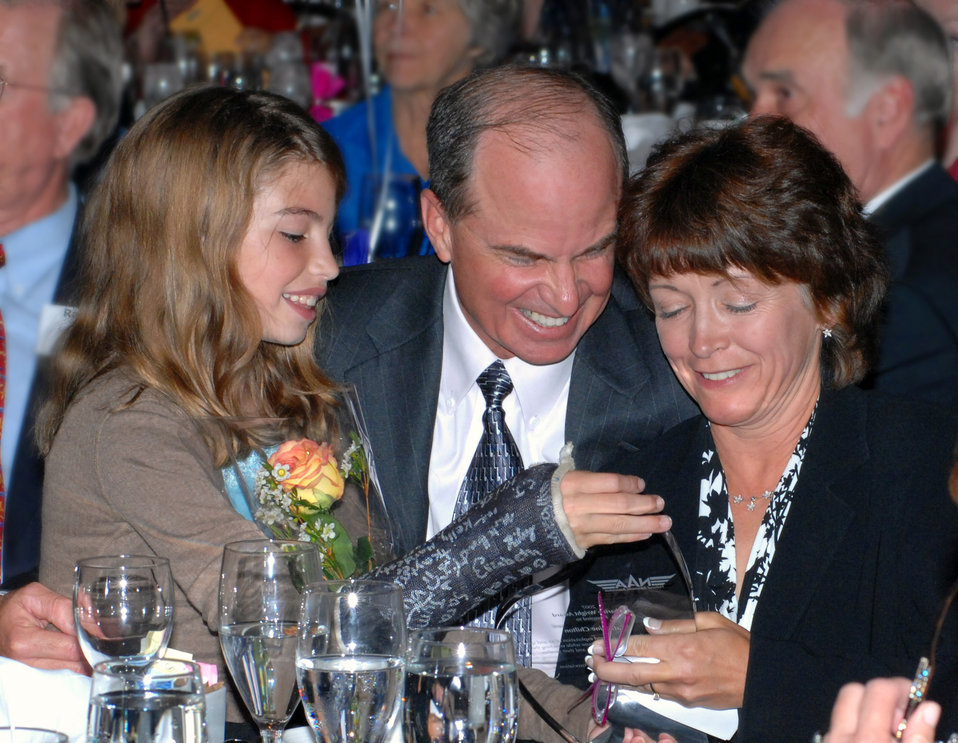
One woman, one big award

Col. Catherine A. Chilton shares a celebratory moment with her husband Gen. Kevin P. Chilton and their daughter, Morgan, Sept. 15 at at a conference of the Ninety-Nines in Boulder, Colo. Colonel Chilton was named the National Aeronautic Association's Katharine Wright Award winner during the conference. The colonel is the senior mobilization assistant to the commander of Air Force Research Laboratory. Her husband, General Chilton, is the Air Force Space Command commander.